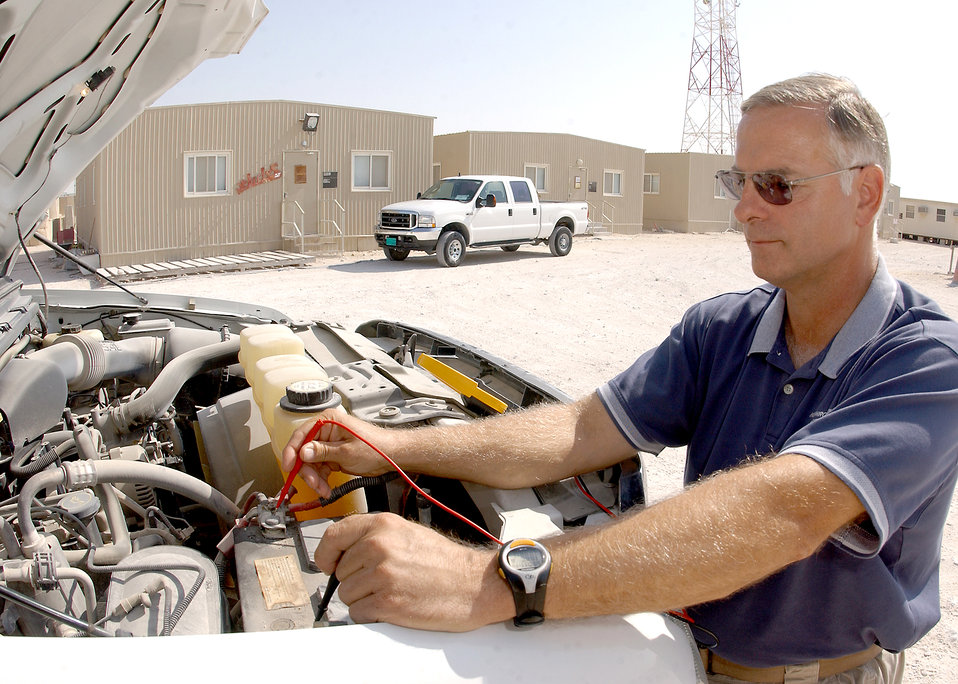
Section keeps security forces equipped, rolling

Gary Burgess tests a vehicle battery. Mr. Burgess is a vehicle maintainer for the 379th Expeditionary Security Forces Squadron.